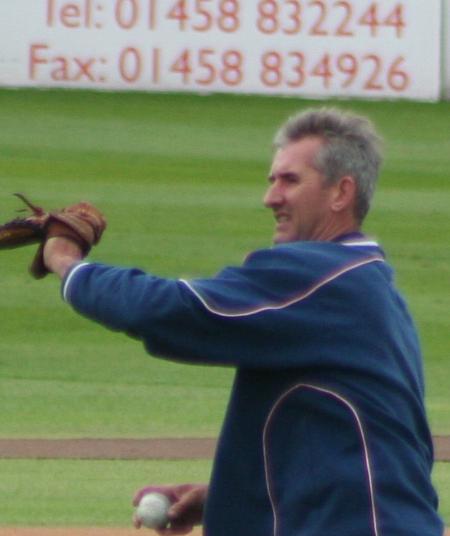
Andy Caddick at Taunton, June 27 2007